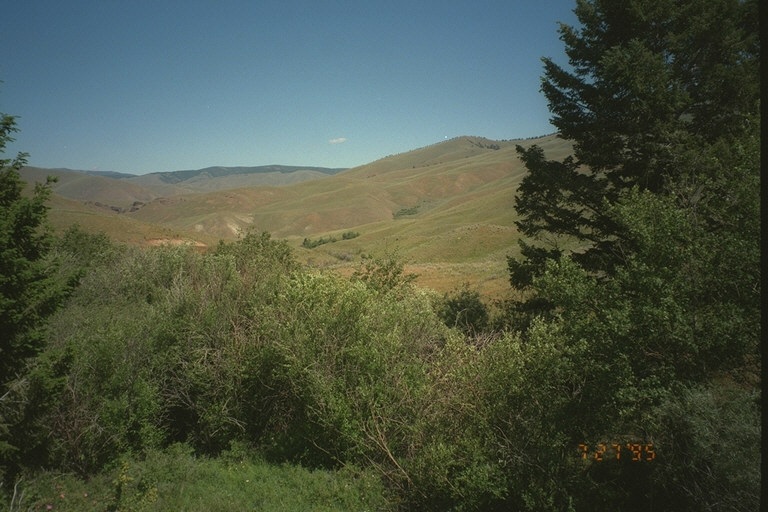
Riparian area Public Lands Salmon Field Office UCSC Upper Columbia Salmon Clearwater District